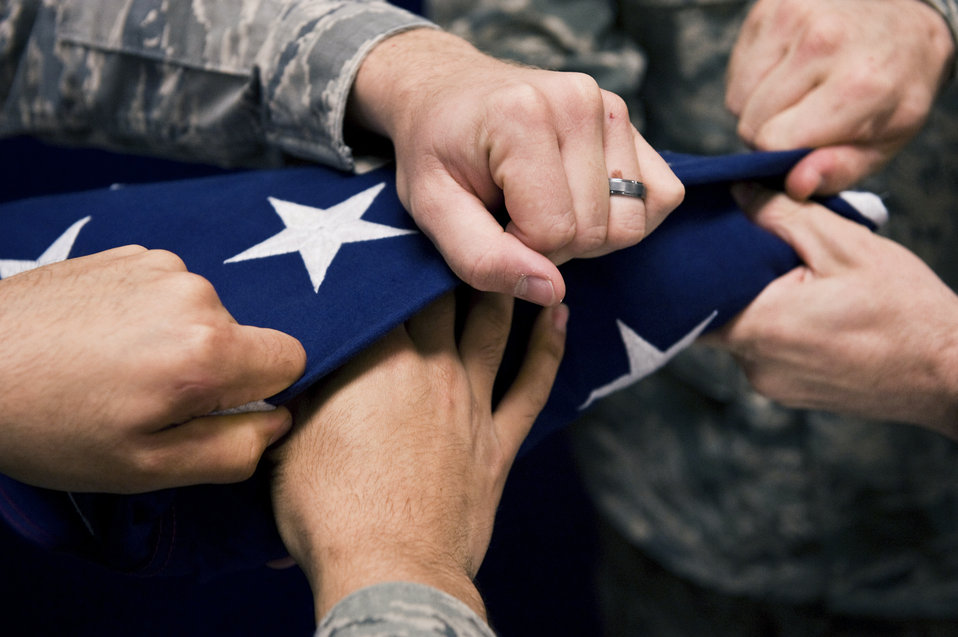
United in respect

Members of the honor guard fold the flag during a practice session Aug. 19, 2010, at Joint Base Elmendorf-Richardson, Alaska.